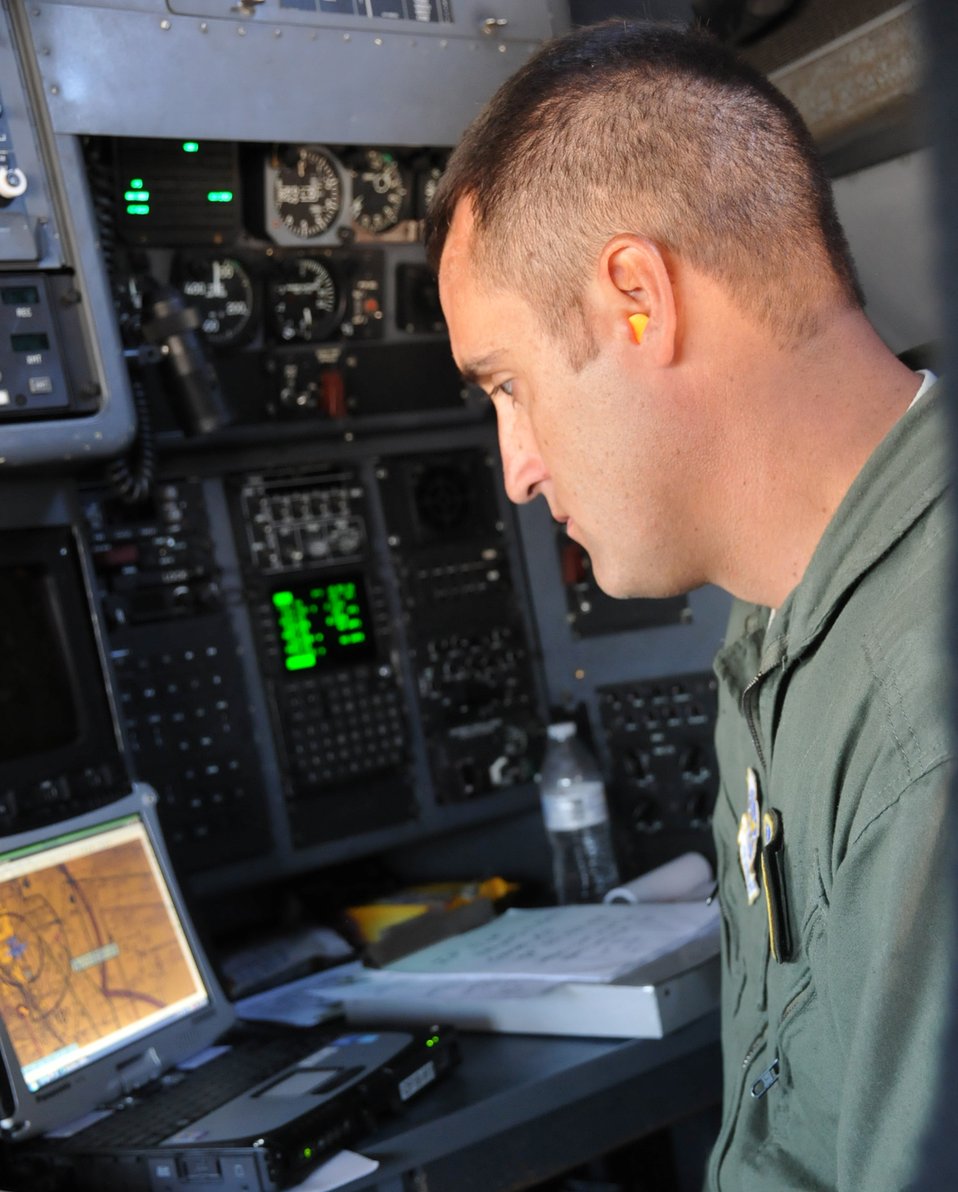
153rd Airlift Wing MAFFS

Capt. Michael Damron prepares for an upcoming Modular Airborne Fire Fighting System mission June 27, 2012. Damron is an active-duty Airman assigned to the Wyoming Air National Guard’s 153rd Airlift Wing. Damron is a C-130 Hercules navigator.